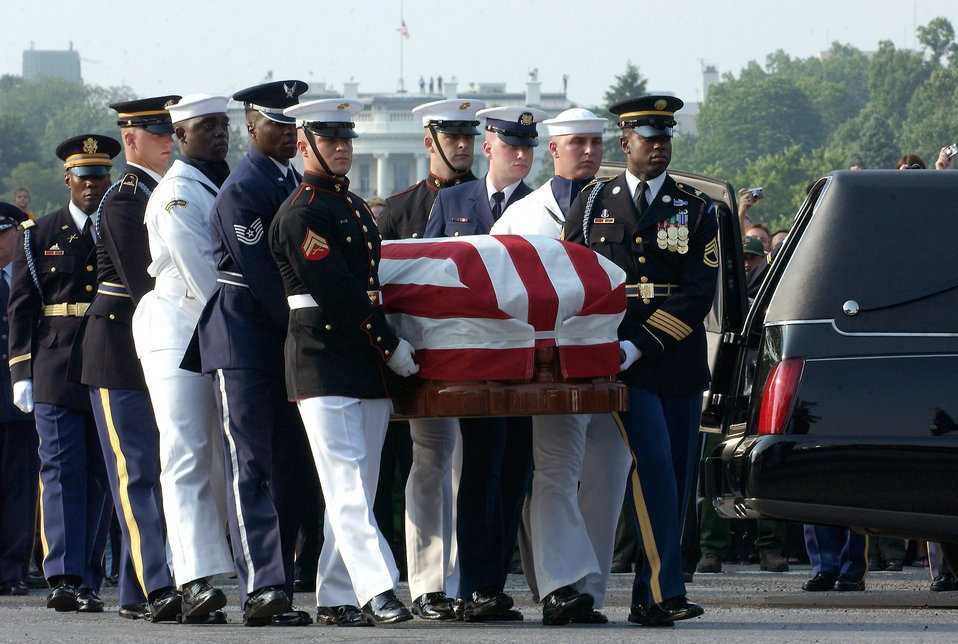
A solemn journey

WASHINGTON (AFPN) -- Members of a joint honor guard carry former President Ronald Reagan's flag-draped casket to a horse-drawn caisson for the funeral procession here June 9. President Reagan will lie in state in the Capitol Rotunda until June 11. He served as the military's commander-in-chief from 1981 to 1989.